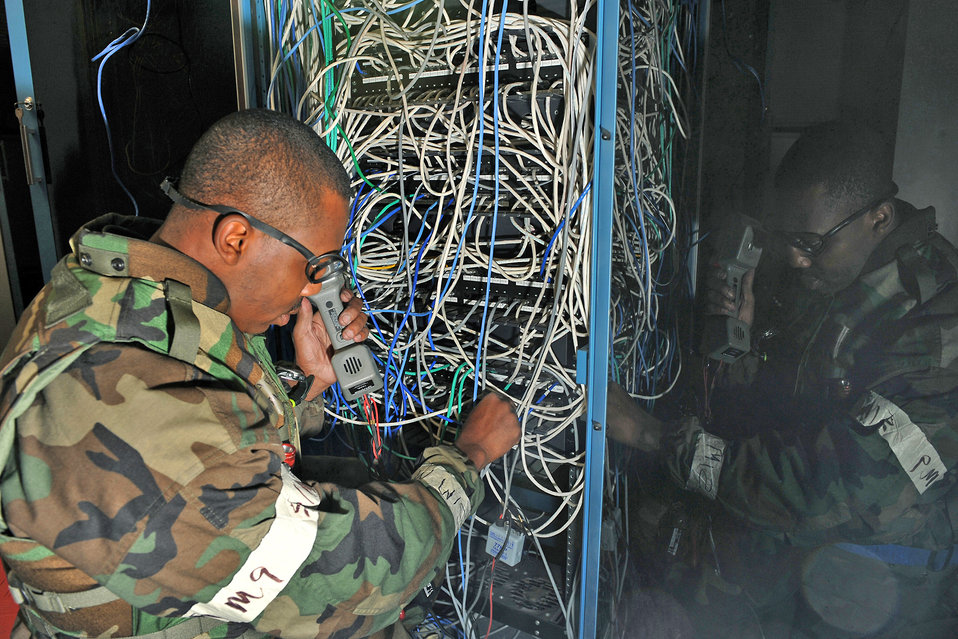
Are your wires crossed?

Staff Sgt. Christopher Phelps checks the switch patch panel for a dial tone as part of a 55th Wing operational readiness inspection Sept. 12, 2009, at Offutt Air Force Base, Neb. Sergeant Phelps is a voice network technician from the 55th Communications Group.